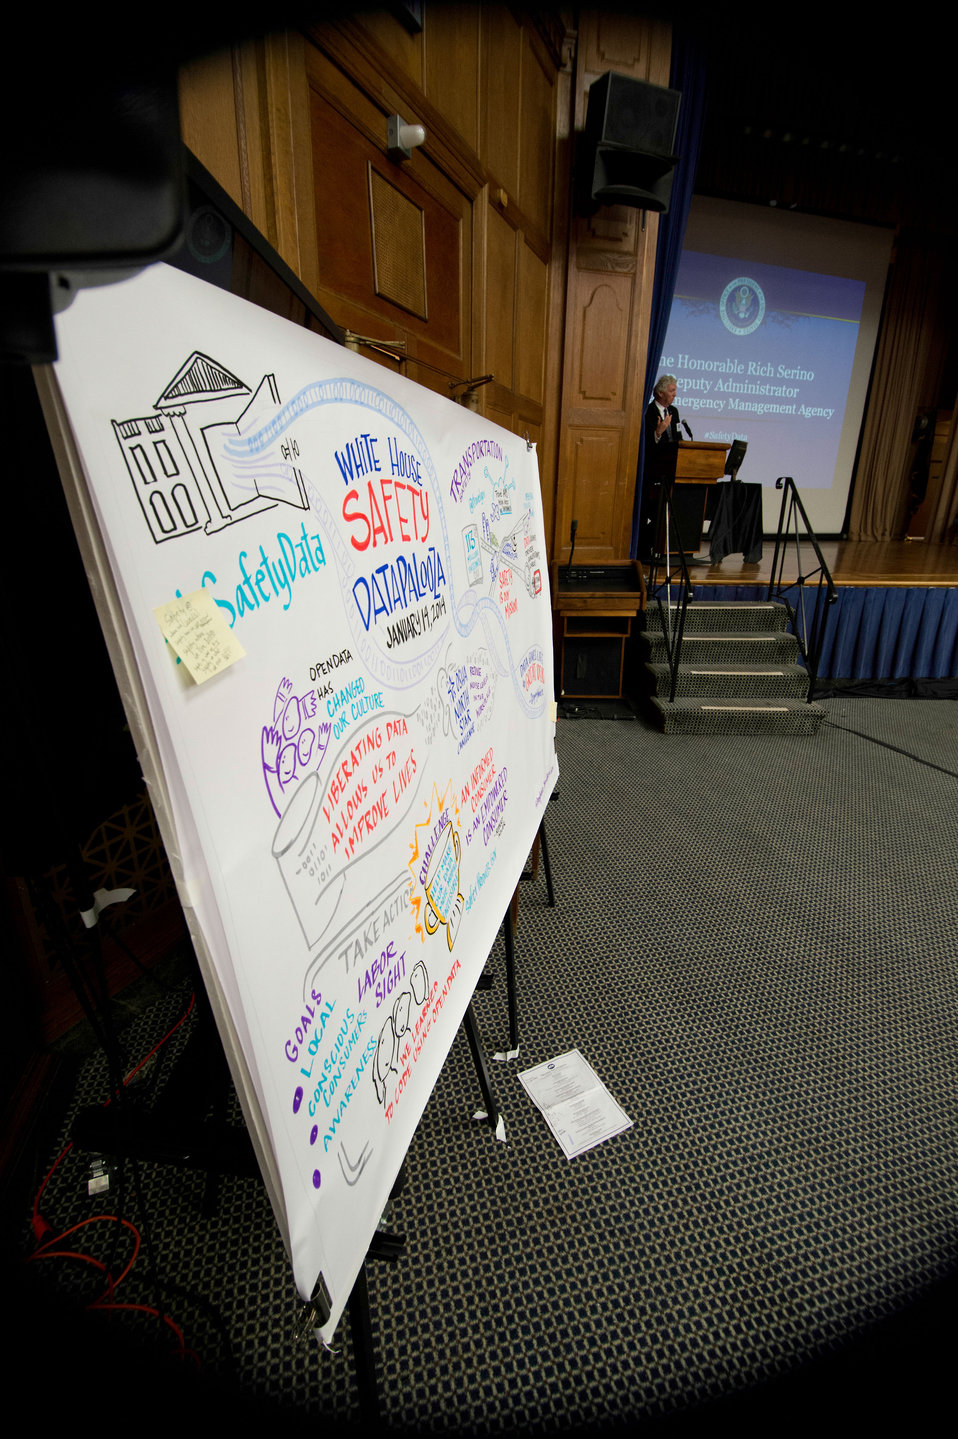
Federal Emergency Management Agency (FEMA) Deputy Administrator Rich Serino speaks at the second annual “Safety Datapalooza,” in the Jefferson Auditorium at USDA in Washington, D.C. on Tuesday, Jan. 14, 2014. The “Safety Datapalooza,” highlights innovators from the private, nonprofit, and academic sectors who have used freely available government data to build products, services, and apps that advance public safety in creative and powerful ways. This year’s meeting features new safety data resources in the areas of transportation, food, occupational and consumer product safety tools to improve disaster preparedness and emergency response.